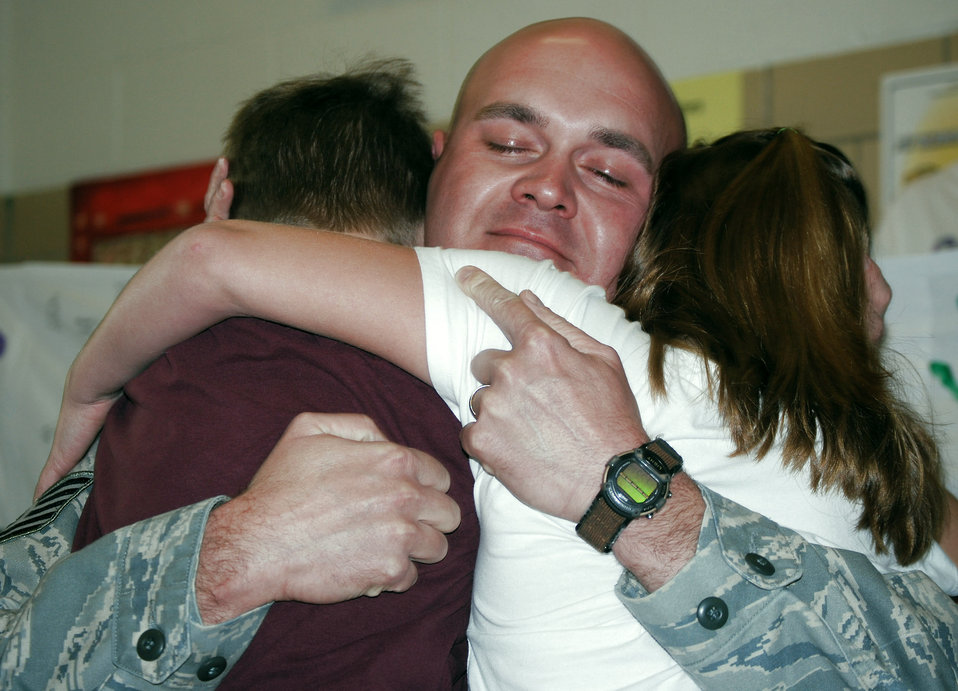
Deployed dad's return completes 'family puzzle'

Tech. Sgt. Brad Burt hugs his children, Austin and Camryn, after surprising them at school when he returned from a recent deployment Feb. 27 at Sheppard Air Force Base, Texas. Sergeant Burt and his wife, Deanna, planned the event for several months while he was deployed to Iraq to train Iraqi air force aircraft maintenance personnel. Sergeant Burt is an instructor at the 361st Training Squadron.